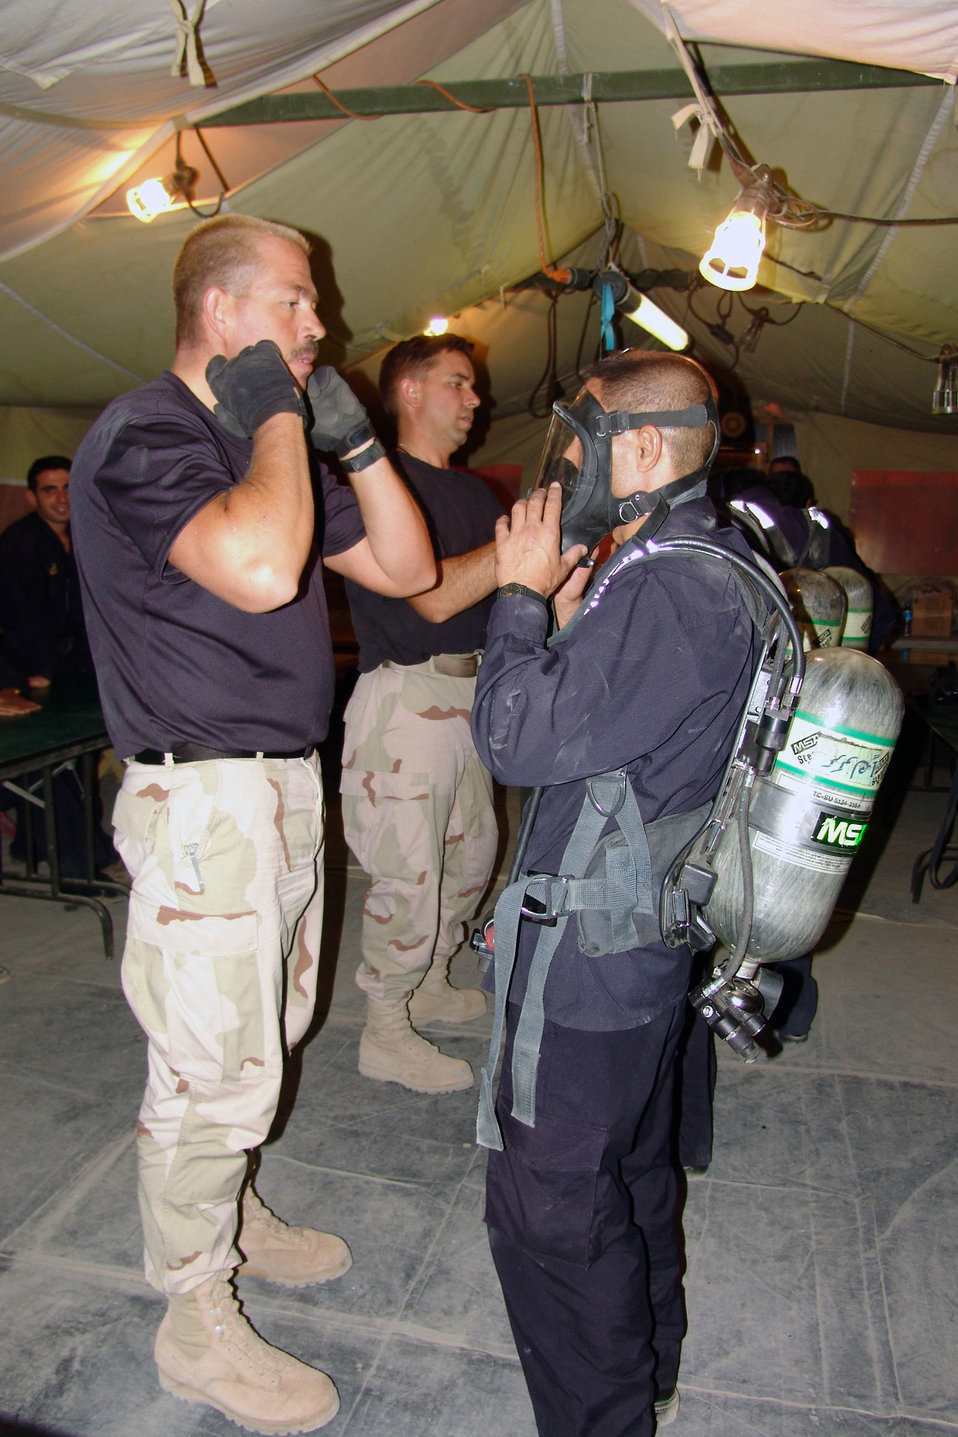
Kirkuk firefighters train Iraqis

KIRKUK AIR BASE, Iraq -- Tech. Sgt. Norman Harrington shows an Iraqi firefighter how to remove his mask during. Firefighters with the 506th Expeditionary Civil Engineer Squadron train oil pipeline protection personnel in first aid, cardio pulmonary resuscitation and basic firefighting skills.